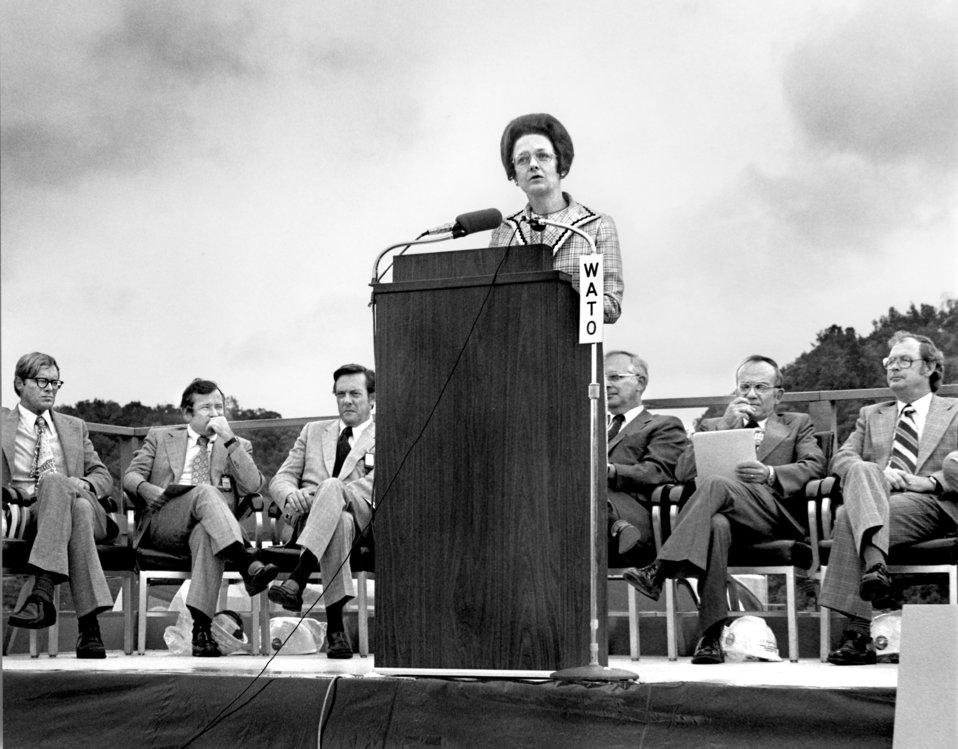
Congresswoman Marilyn Lloyd at ORNL Environmental Science Lab Ground Breaking Oak Ridge 1975

75-331-4 DOE photo Frank Hoffman 9-12-1975 Oak Ridge Tennessee